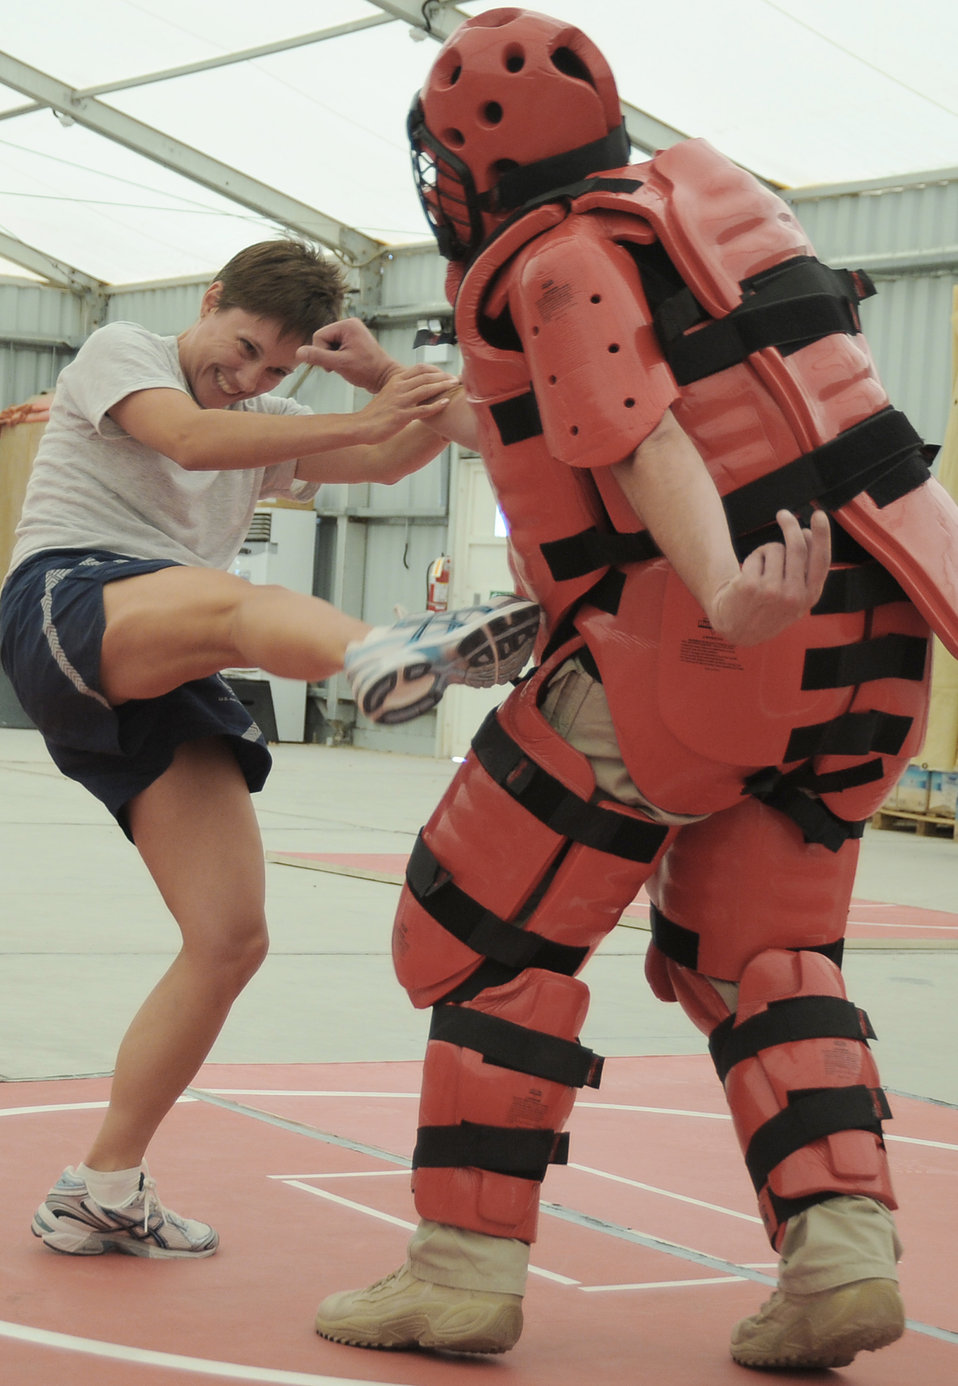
Getting defensive

Master Sgt. Malinda Kingsley fights off the